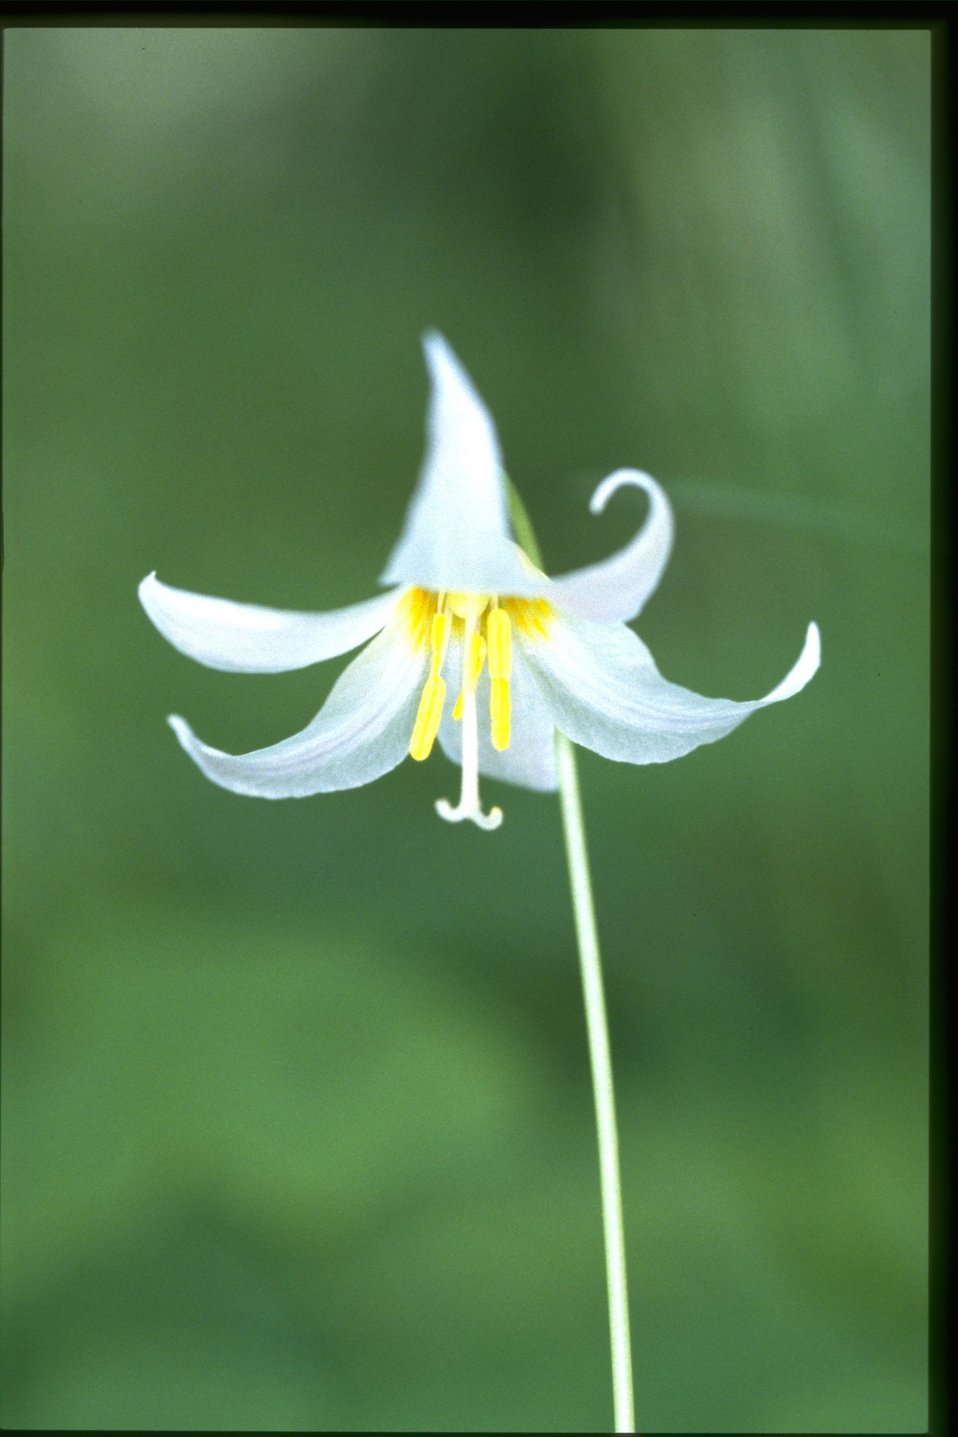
Closeup shot of Erythronium oreganum.